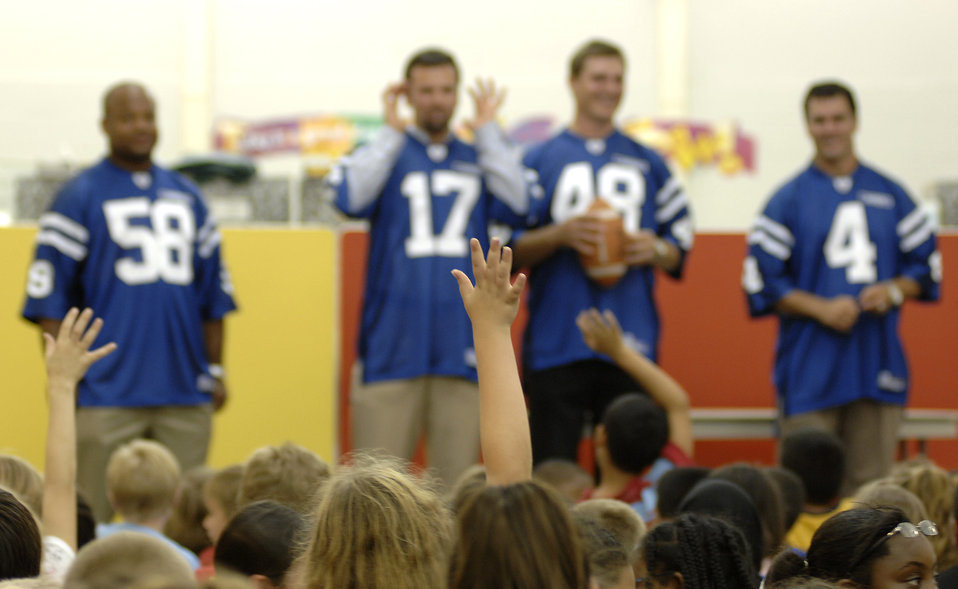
Indianapolis Colts visit Randolph Air Force Base

Indianapolis Colts (from left to right) Gary Brackett, Hunter Smith, Justin Snow and Adam Vinatieri answer questions at Randolph Elementary School on Randolph Air Force Base, Texas, June 1. The team members spent the day visiting with base personnel and school children, enhancing the already strong relationship between the team and the Air Force.